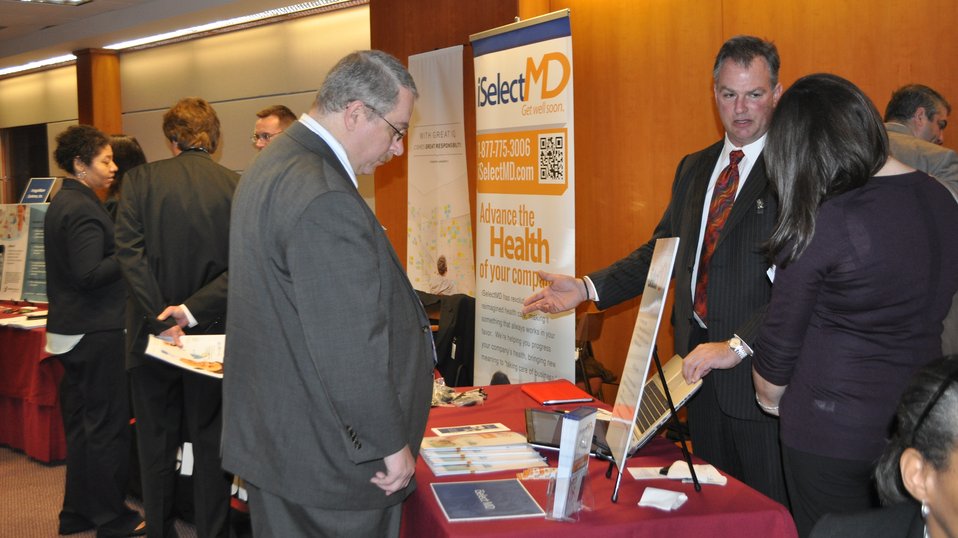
12.6.13 mHealth Innovation Expo

FCC mHealth Innovation Expo.